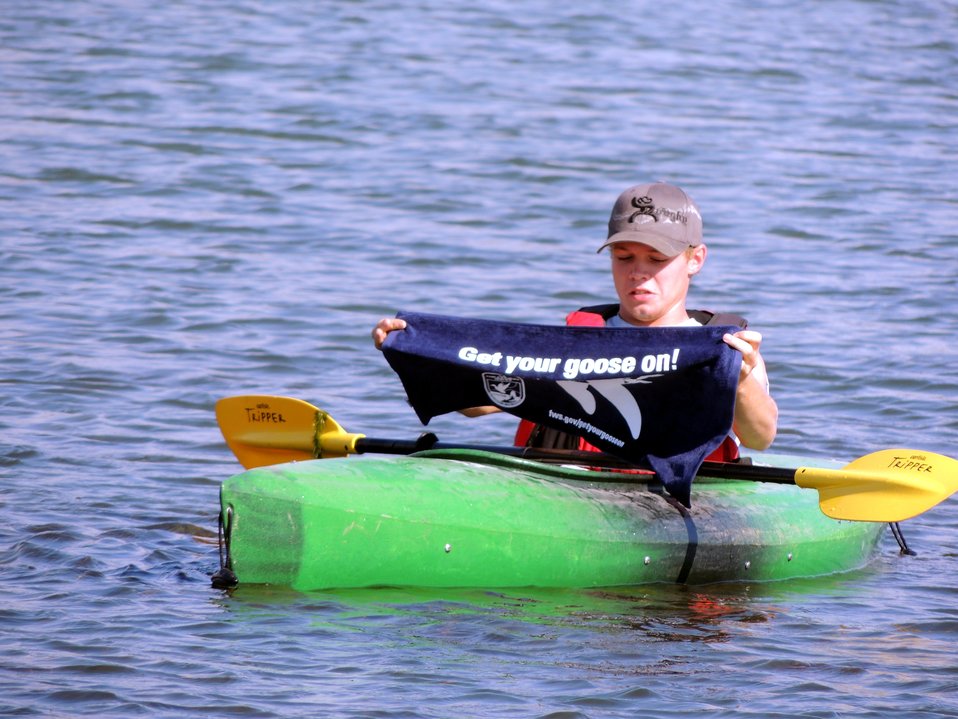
Get Your Goose On!

Wichita Mountains National Wildlife Refuge in Oklahoma.